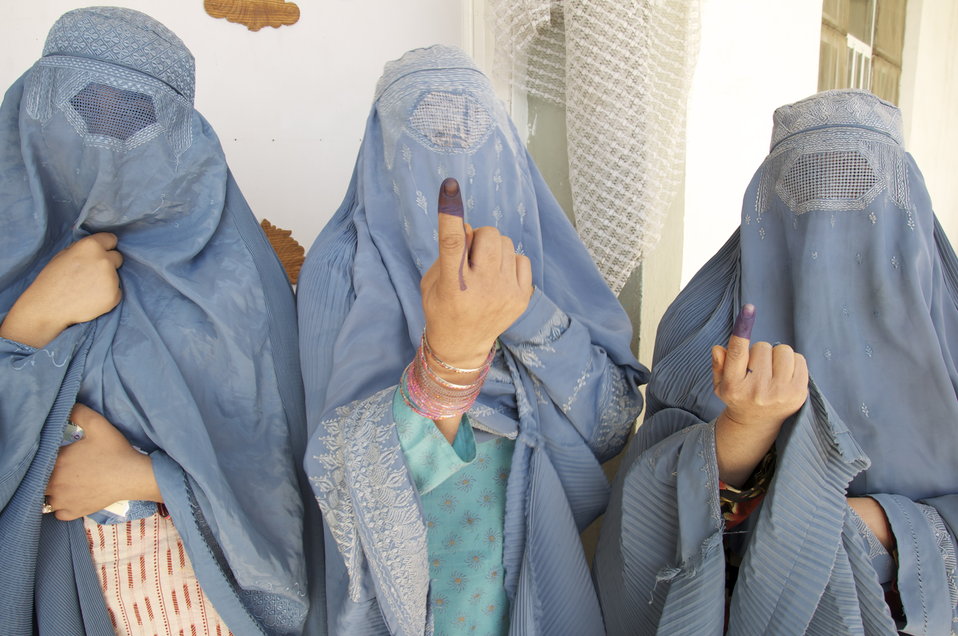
Blue Fingers

Afghan women in Kabul proudly show their blue fingers as evidence of their vote in the 2010 Parliamentary Elections.